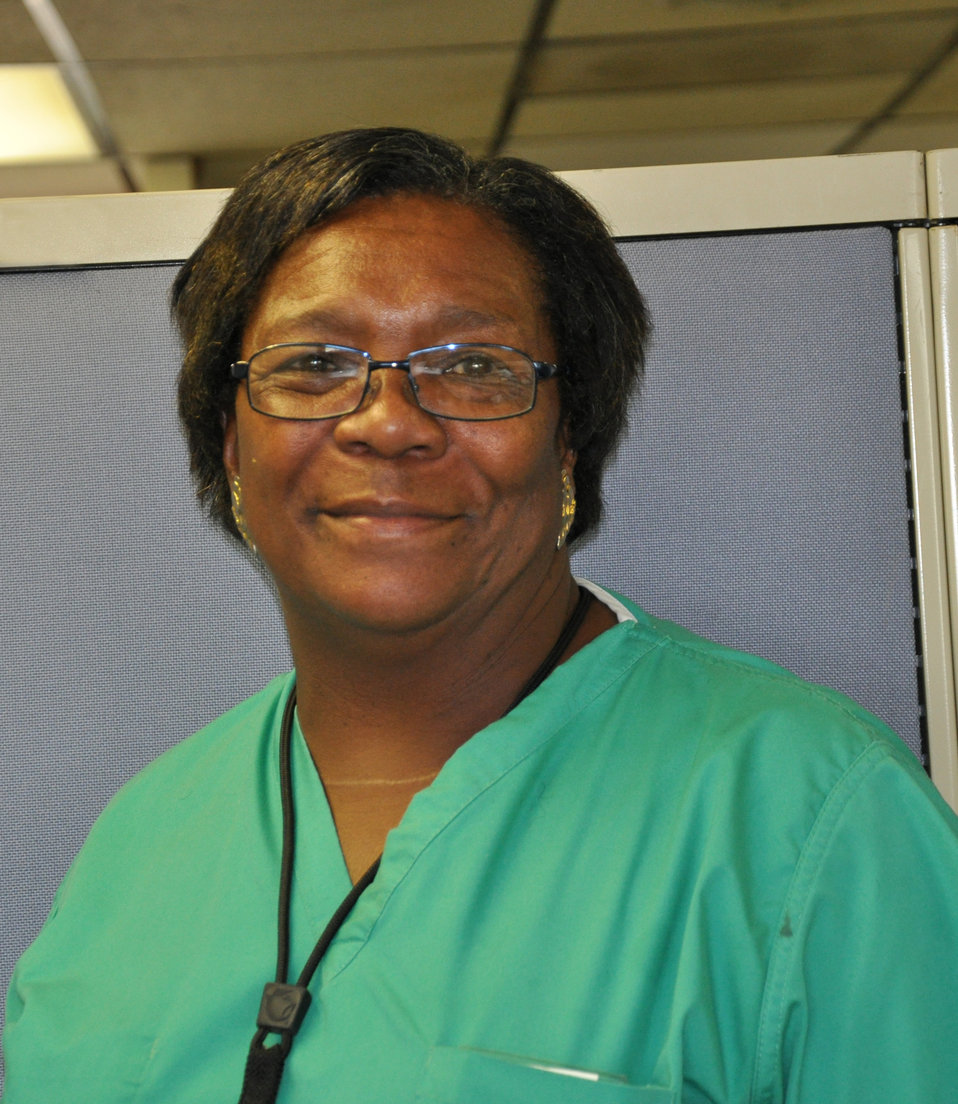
Sandra Holman